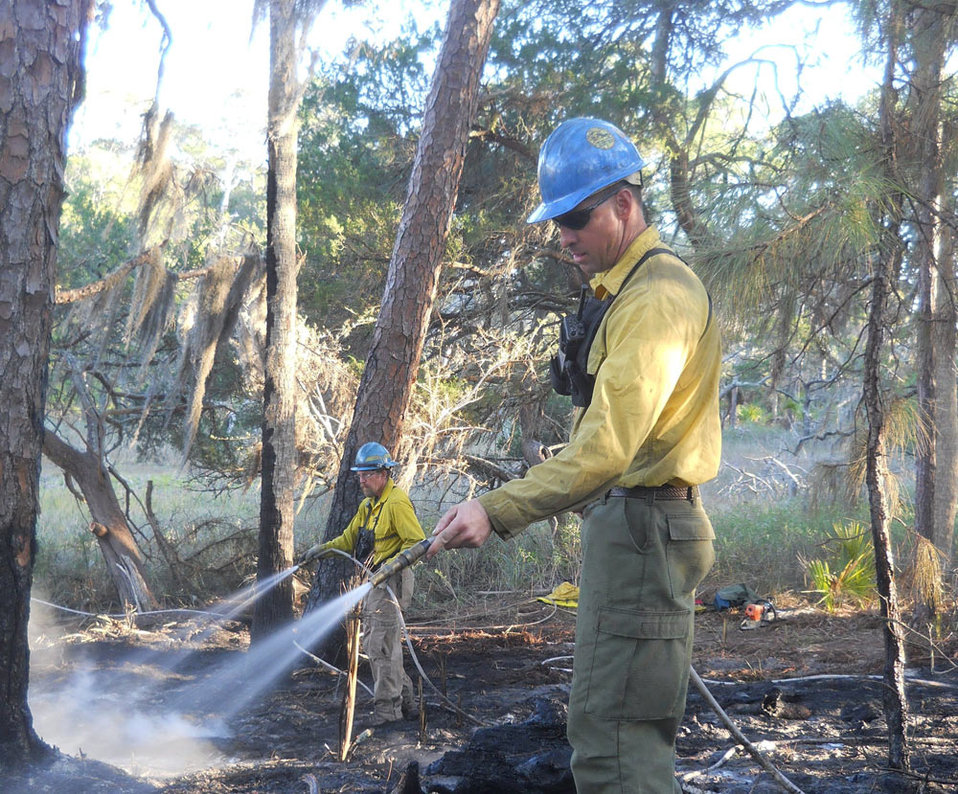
Randy McClain-Southeast Region

Randy McClain served for years in the South Carolina National Guard and is a Fire Engineering Equipment Operator at Carolina Sandhills National Wildlife Refuge in McBee, South Carolina.